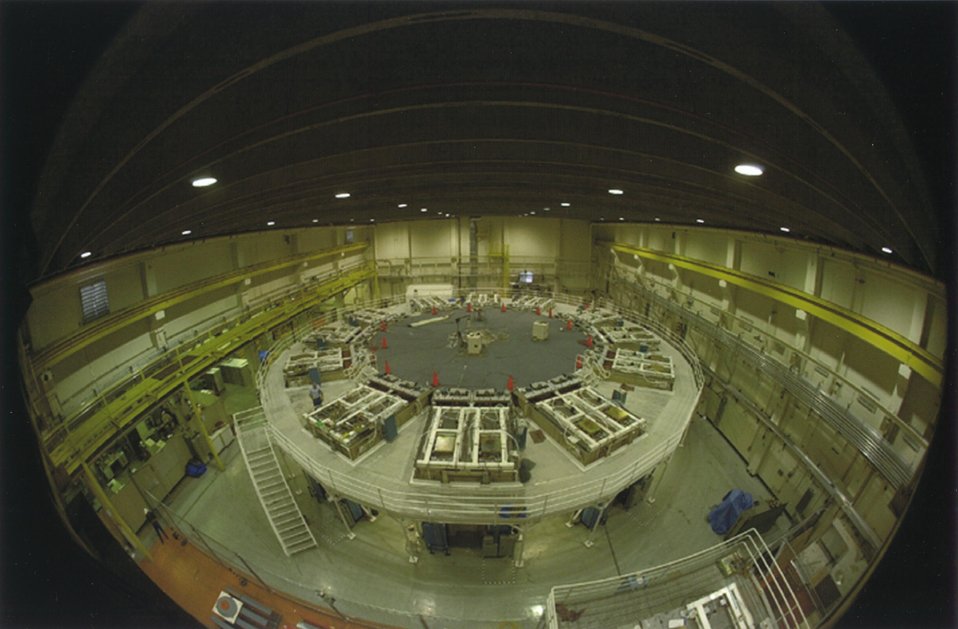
ATLAS PULSED POWER EXPERIMENTAL FACILITY.

THE ATLAS PULSED POWER EXPERIMENTAL FACILITY (ATLAS) BUILT AT LANL AS PART OF THE STOCKPILE STEWARDSHIP PROGRAM, TO VALIDATE CERTAIN ELEMENTS OF NUCLEAR WEAPONS COMPUTER CODES.